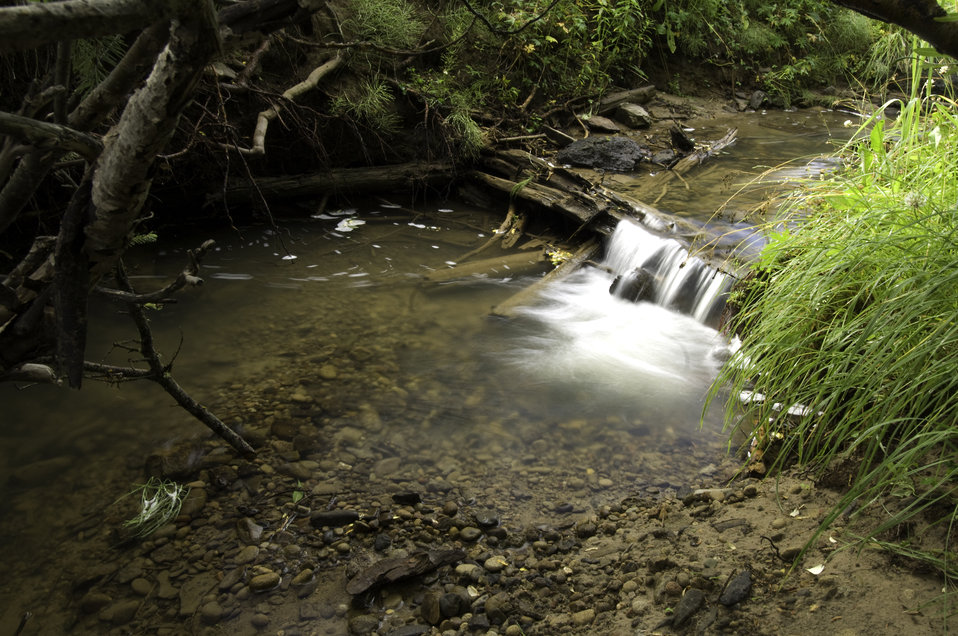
Stream crossings by roads can pose serious threats to fish ecosystems. The cumulative effect of culverts, fords, and other structures throughout a stream channel can significantly change the streams geomorphology (study of the characteristics, origin, and development of landforms) and impair fish passage by blocking valuable spawning and rearing habitat. The U. S. Department of Agriculture (USDA) Forest Service’s (FS) Aquatic Organism Passage (AOP) project is to identify the stream crossings in National Forests that have poorly designed crossings and replace those crossings to improve water quality and native habitat. This photo was taken in the White River National Forest, Glenwood Springs, Colorado on August 17, 2007.